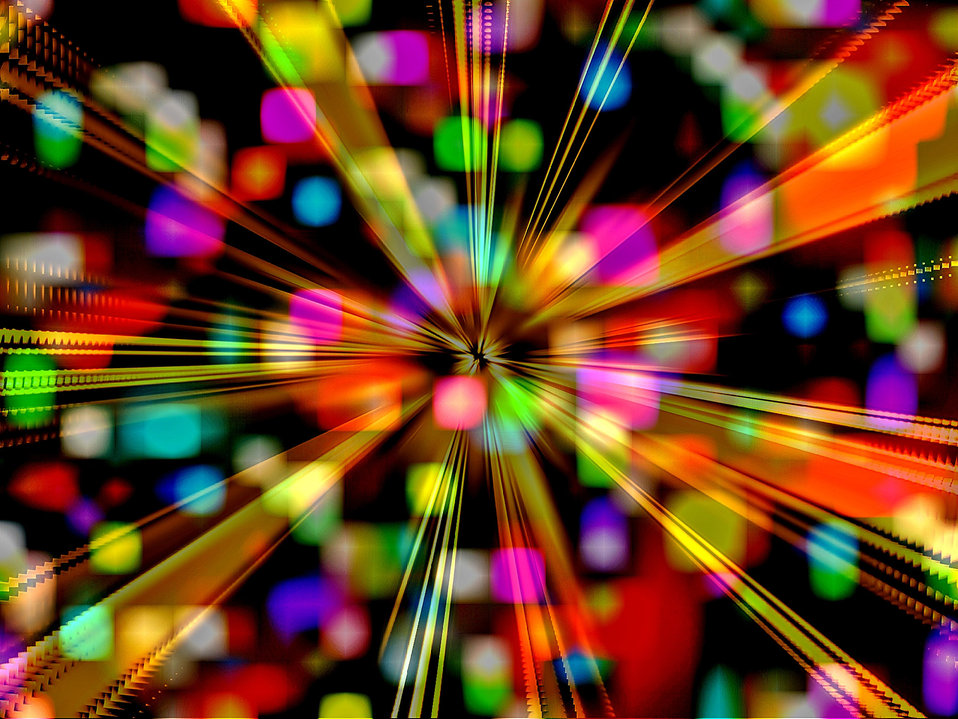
Out of focus light effects 2

Background.